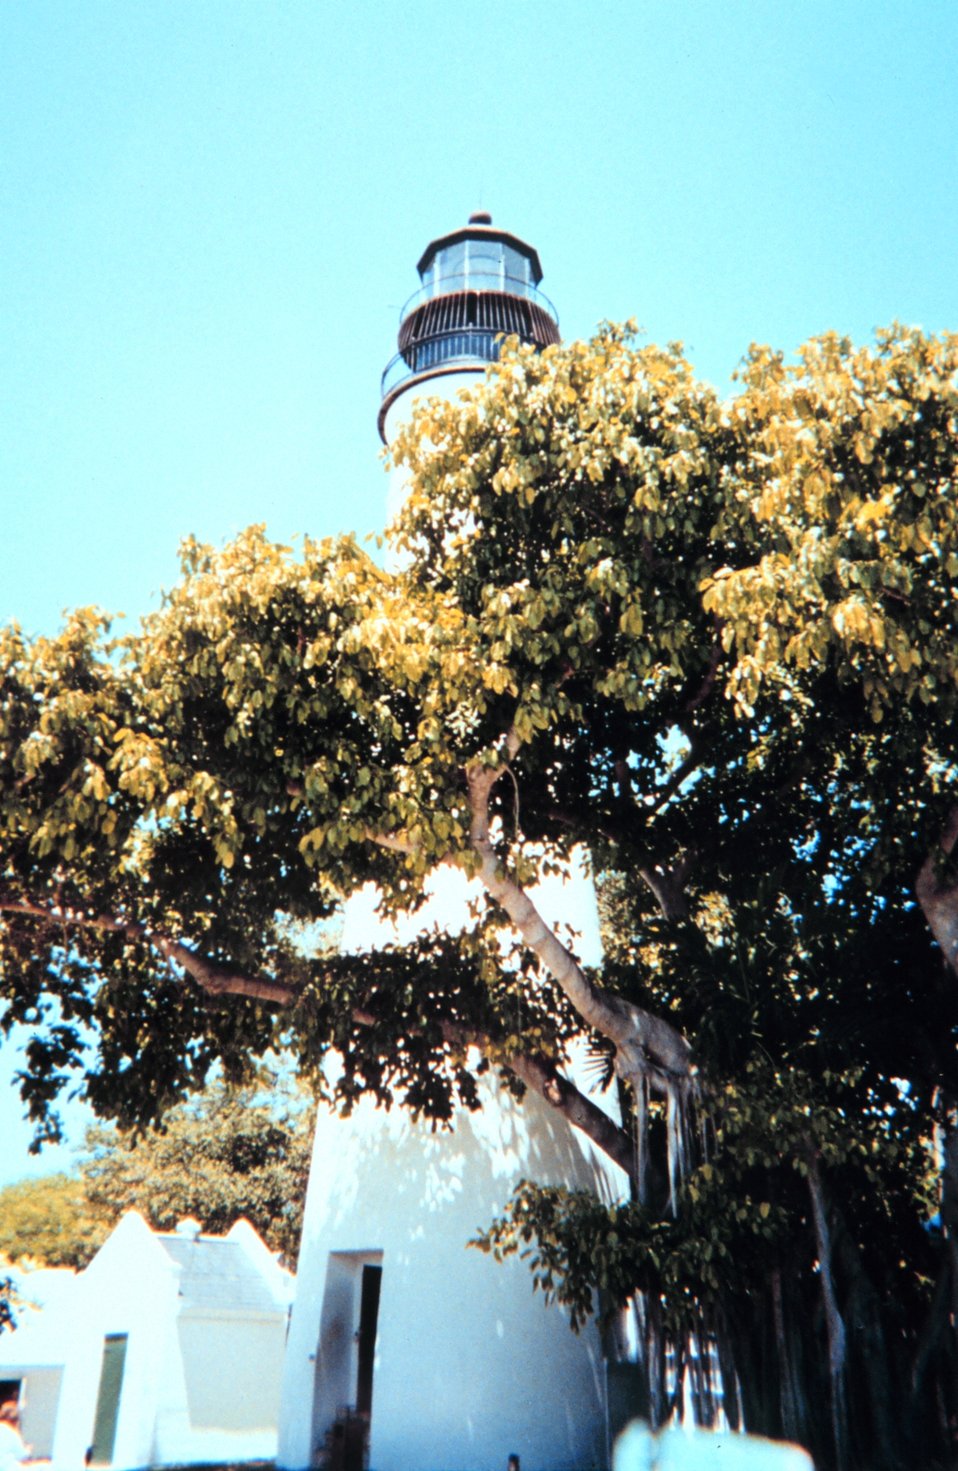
The lighthouse at Key West.